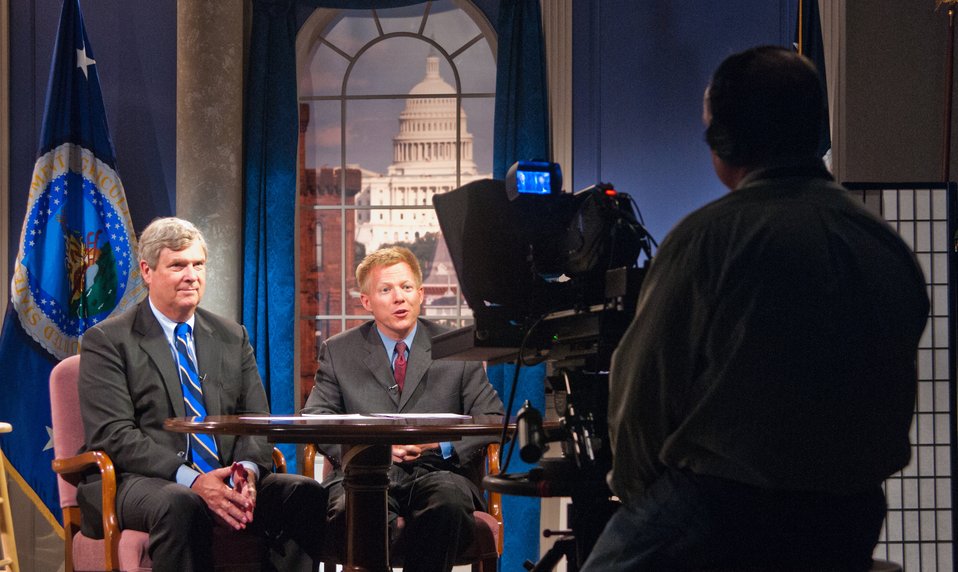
Agriculture Secretary Tom Vilsack and U.S. Department of Agriculture (USDA) StrikeForce Initiative Director Max Finberg participate in a Google Hangout to discuss StrikeForce opportunities, success stories and ways communities may get involved at USDA in Washington, D.C. on Monday, Jun. 17, 2013. The StrikeForce Initiative targets rural areas of persistent poverty where USDA staff can work with state, local and community officials to increase awareness of programs and services that help to promote economic development and job creation.